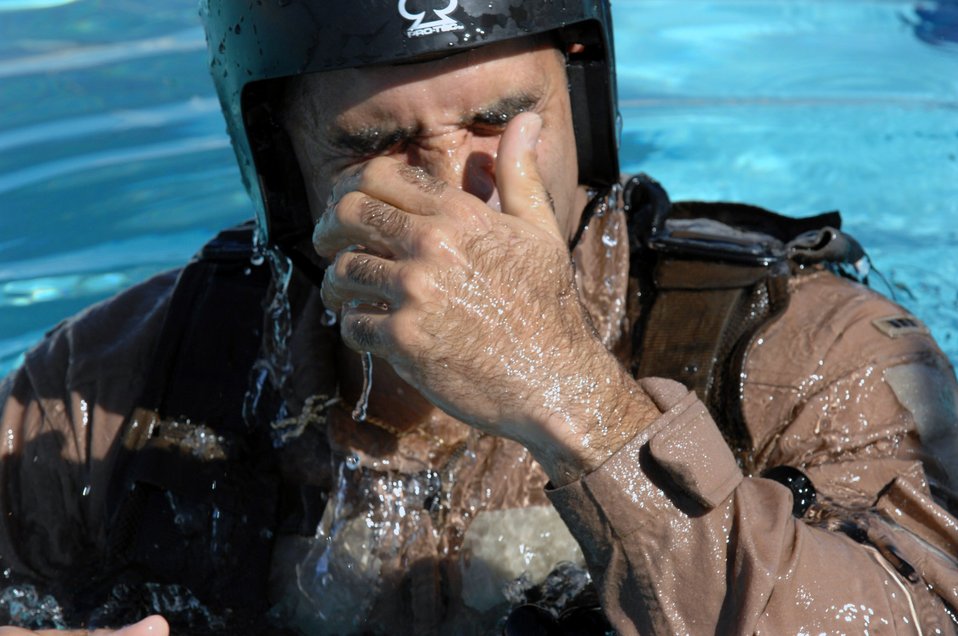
Practicing to be safe in the water

Army Chief Warrant Officer Ralph Hernandez wipes his eyes after exiting a helicopter underwater dunker device during his annual water survival training. The training is conducted by survival, evasion, resistance and escape, or SERE, instructors at Nellis Air Force Base, Nev. The Army National Guardsman is an OH-58 Scout instructor pilot.